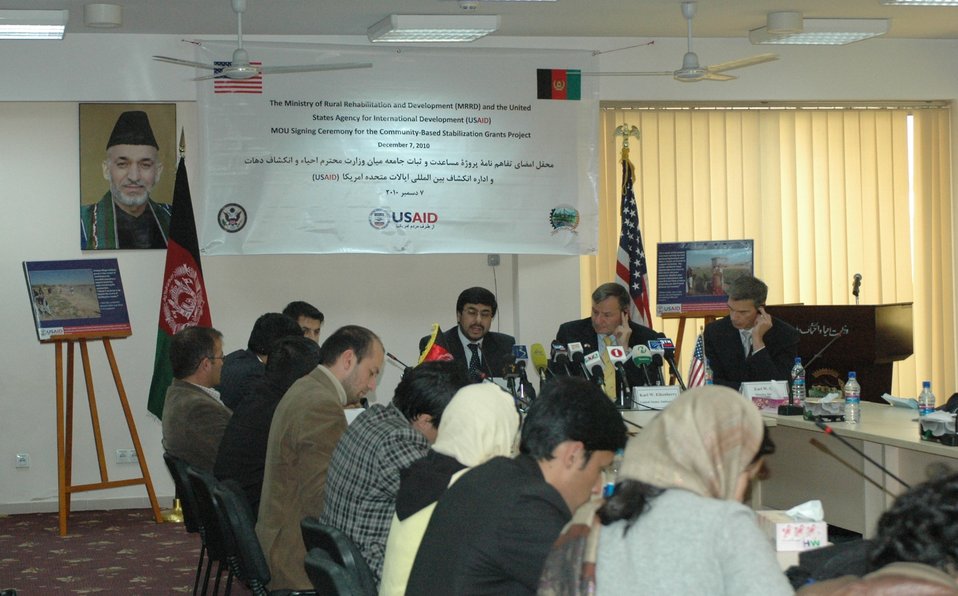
Community Based Stabilization Grants Ceremony, December 7, 2010